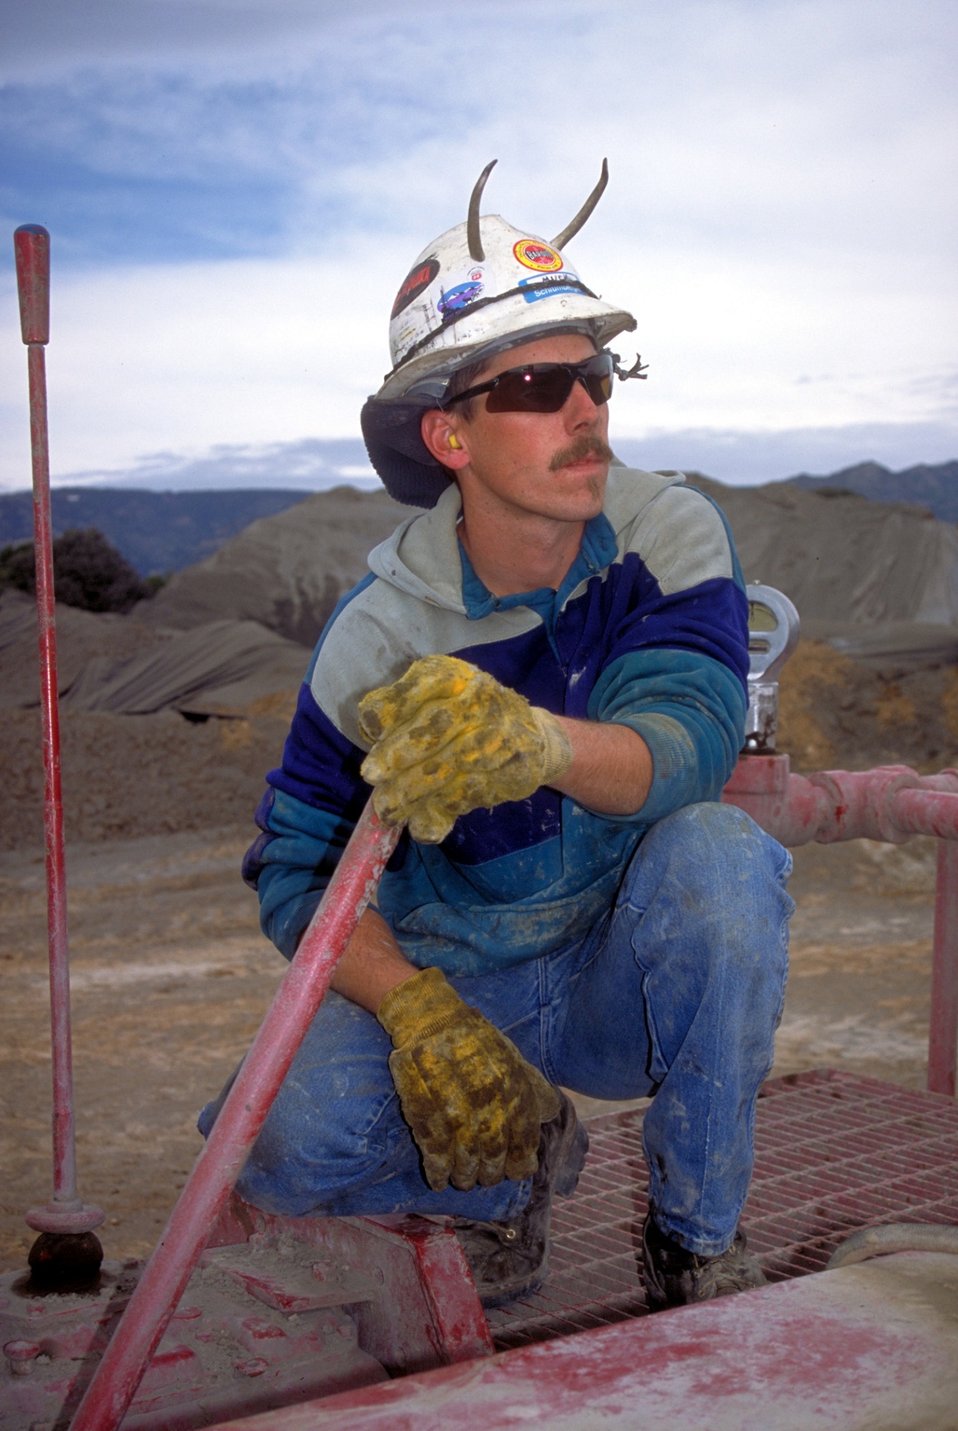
Drilling for coal bed methane near Price, Utah.